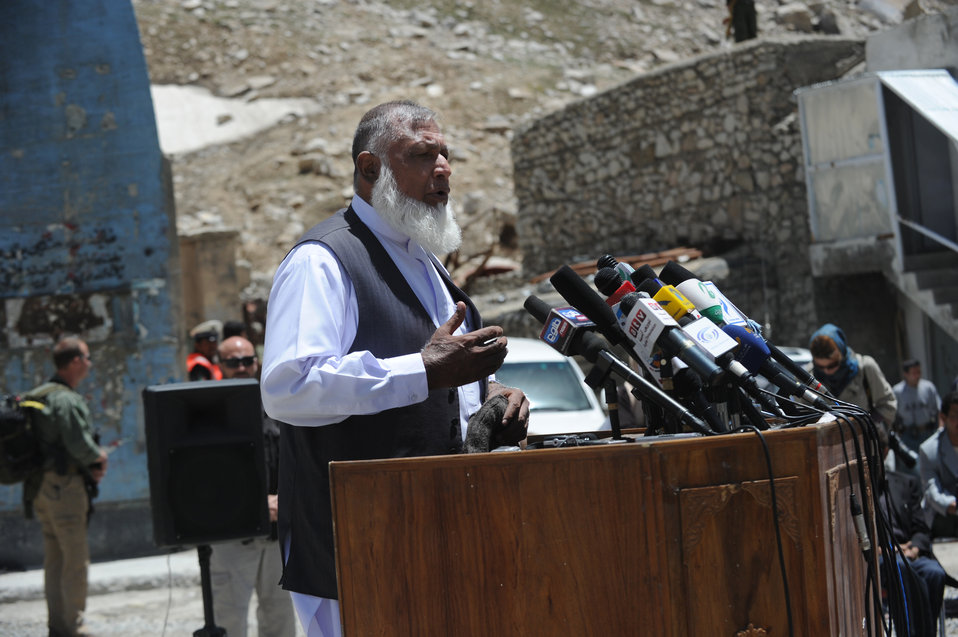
U.S. Ambassador Karl W. Eikenberry attends a ceremony to mark the beginning of renovations at the Salang Tunnel on the border of Parwan and Baghlan Provinces, Afghanistan, on Wednesday, June 15, 2011. (S.K.Vemmer/Department of State)